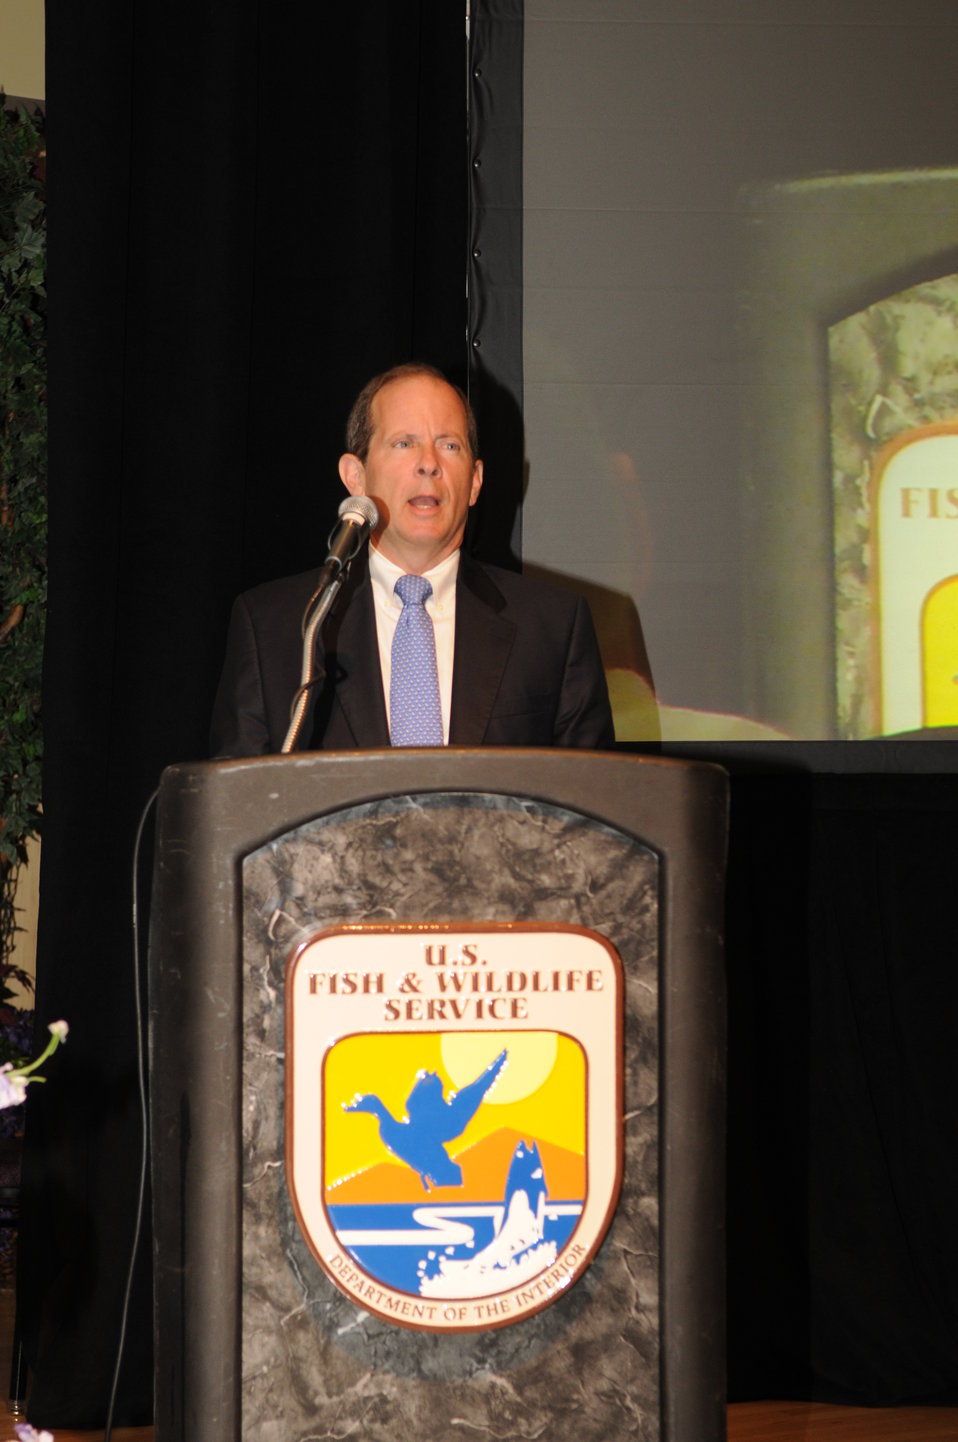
Opening Remarks

The U.S. Fish & Wildlife Service sponsored the 2012 Federal Duck Stamp Art Contest September 28 and 29 in Ogden, Utah, at Weber State University. A panel of five judges was responsible for choosing the art work used to design the 2013-2014 Migratory Bird Hunting and Conservation Stamp.